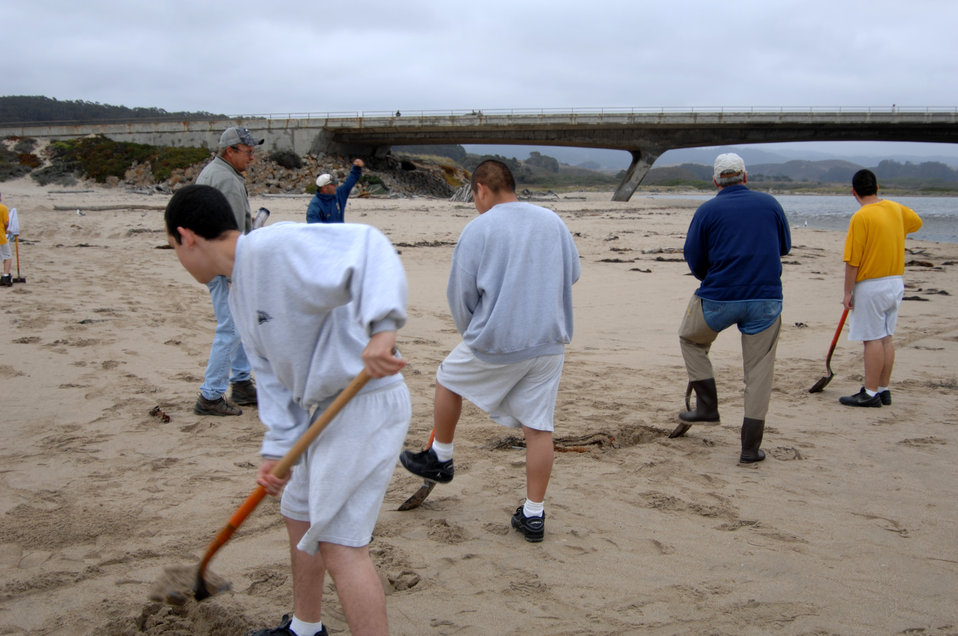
Pescadero Breach 2